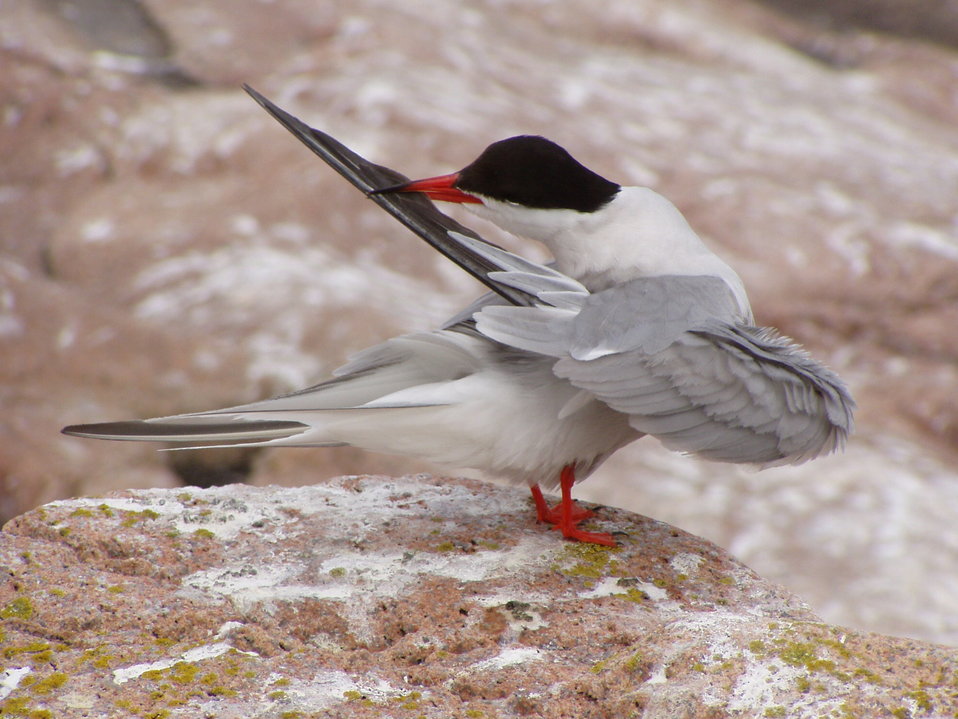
Common tern preening at Maine Coastal Islands National Wildlife Refuge